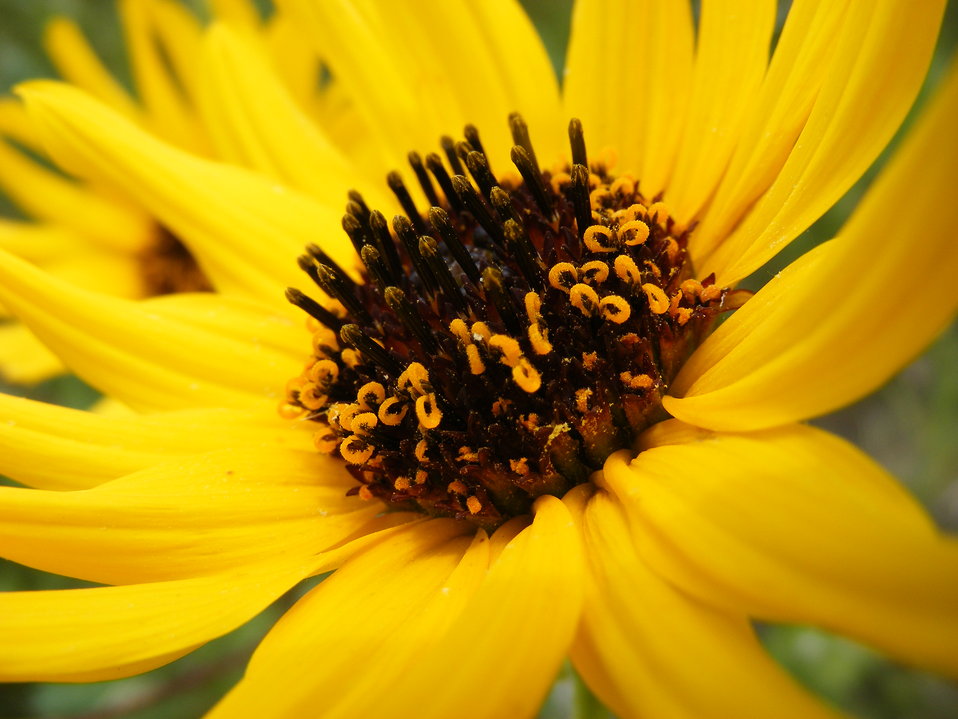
Black-eyed Susan

A common but short-lived flower that blooms from June to September.